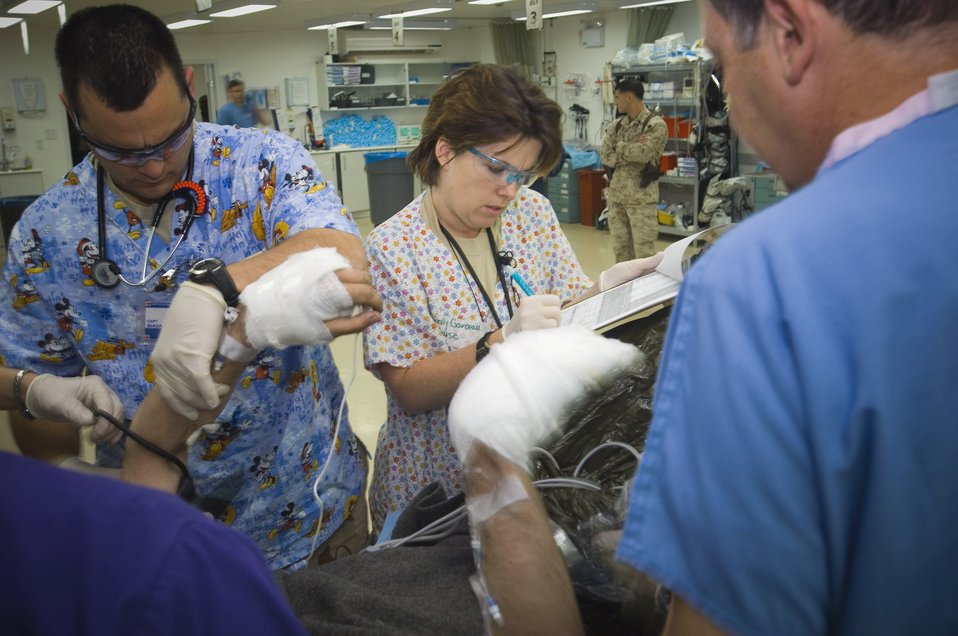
Combat Nurses

Capt. Shelly Garceau records vital signs in the Air Force Theater Hospital at Balad Air Base, Iraq, for a Marine who suffered burns on his face and arms. Captain Garceau is an emergency room nurse who is deployed from Wilford Hall Medical Center, San Antonio, Texas.